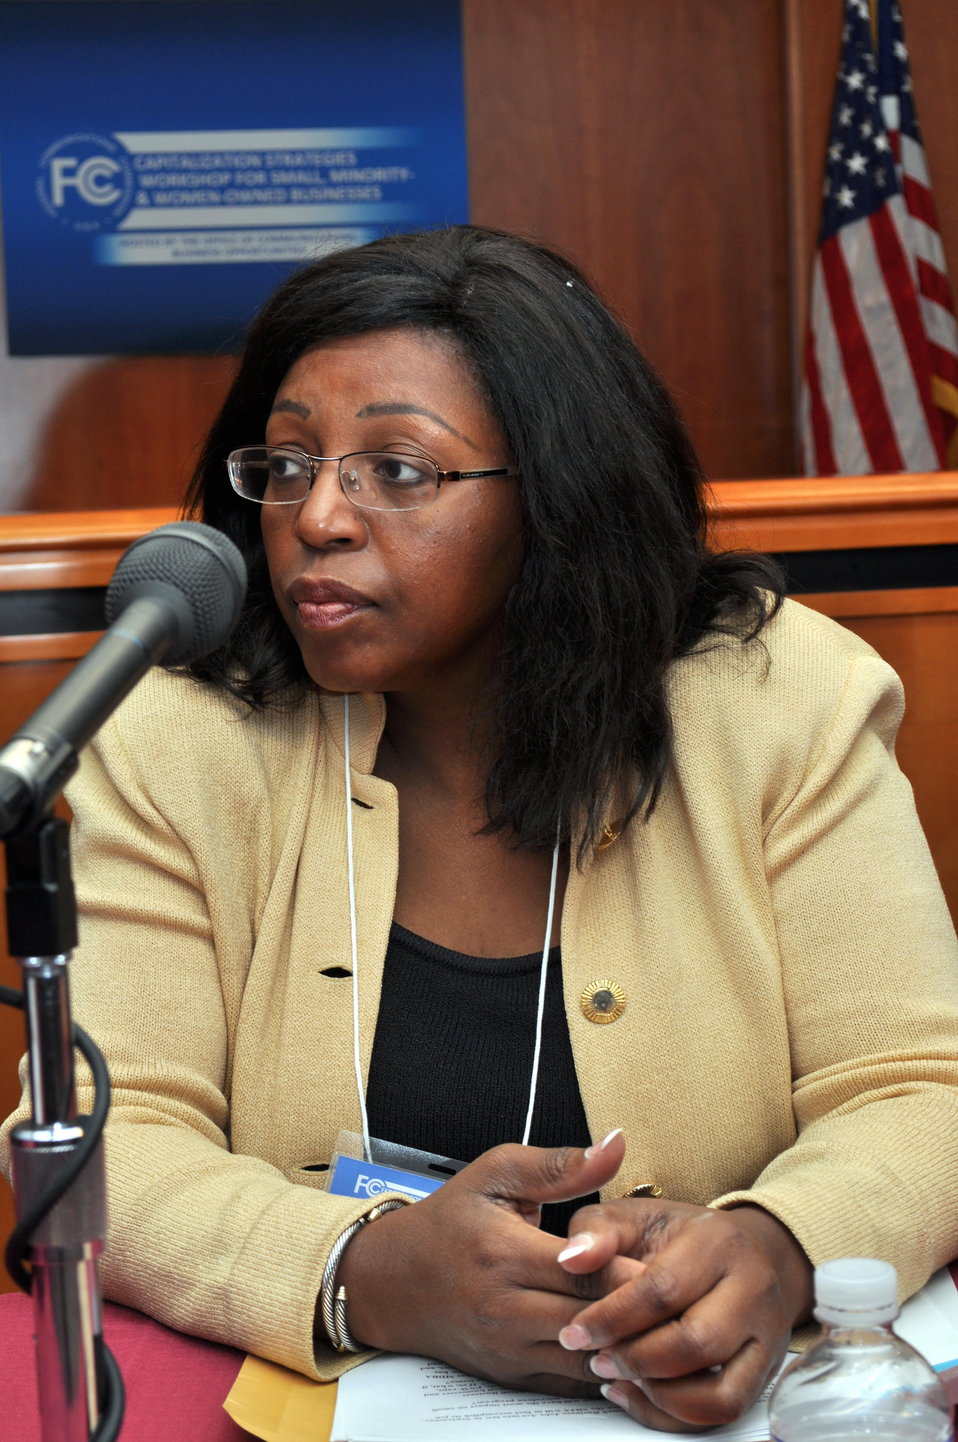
Capitalization Strategies

Workshop for small, minority and women owned businesses. Hosted by the Office of Communications Business Opportunities